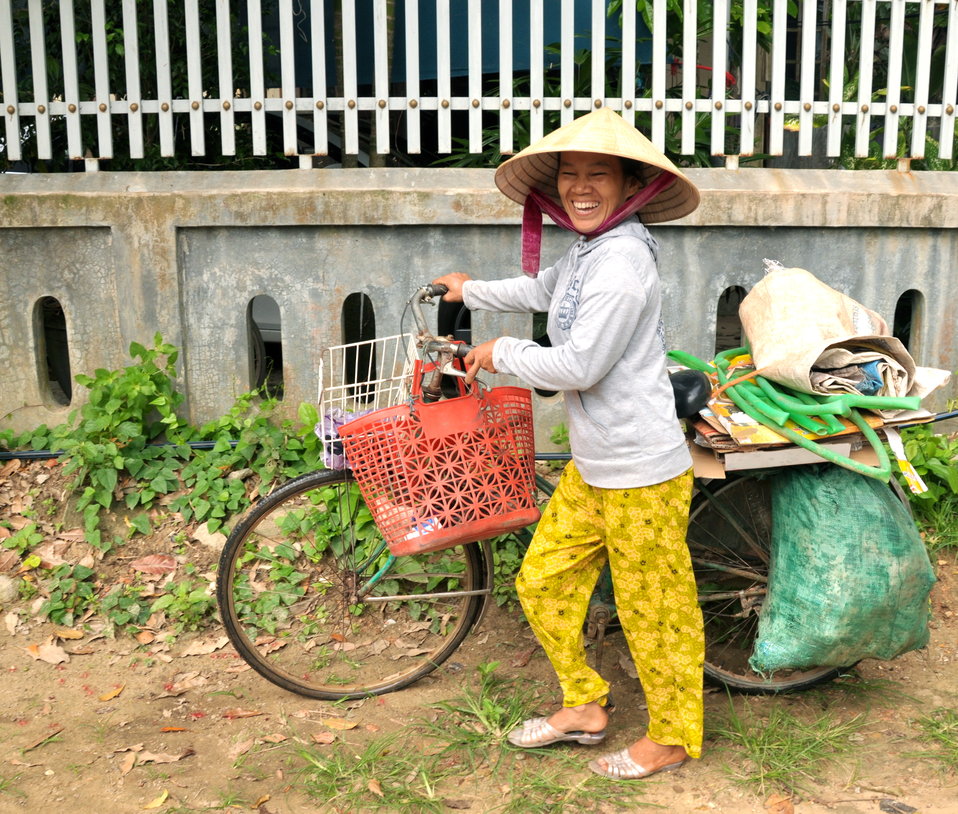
USAID and Save the Children support community evacuation drill and emergency preparedness in central Vietnam

Loc An Commune, Phu Loc District, Thua Thien Hue Province
December 4, 2012, Photo: Richard Nyberg, @USAIDVietnam